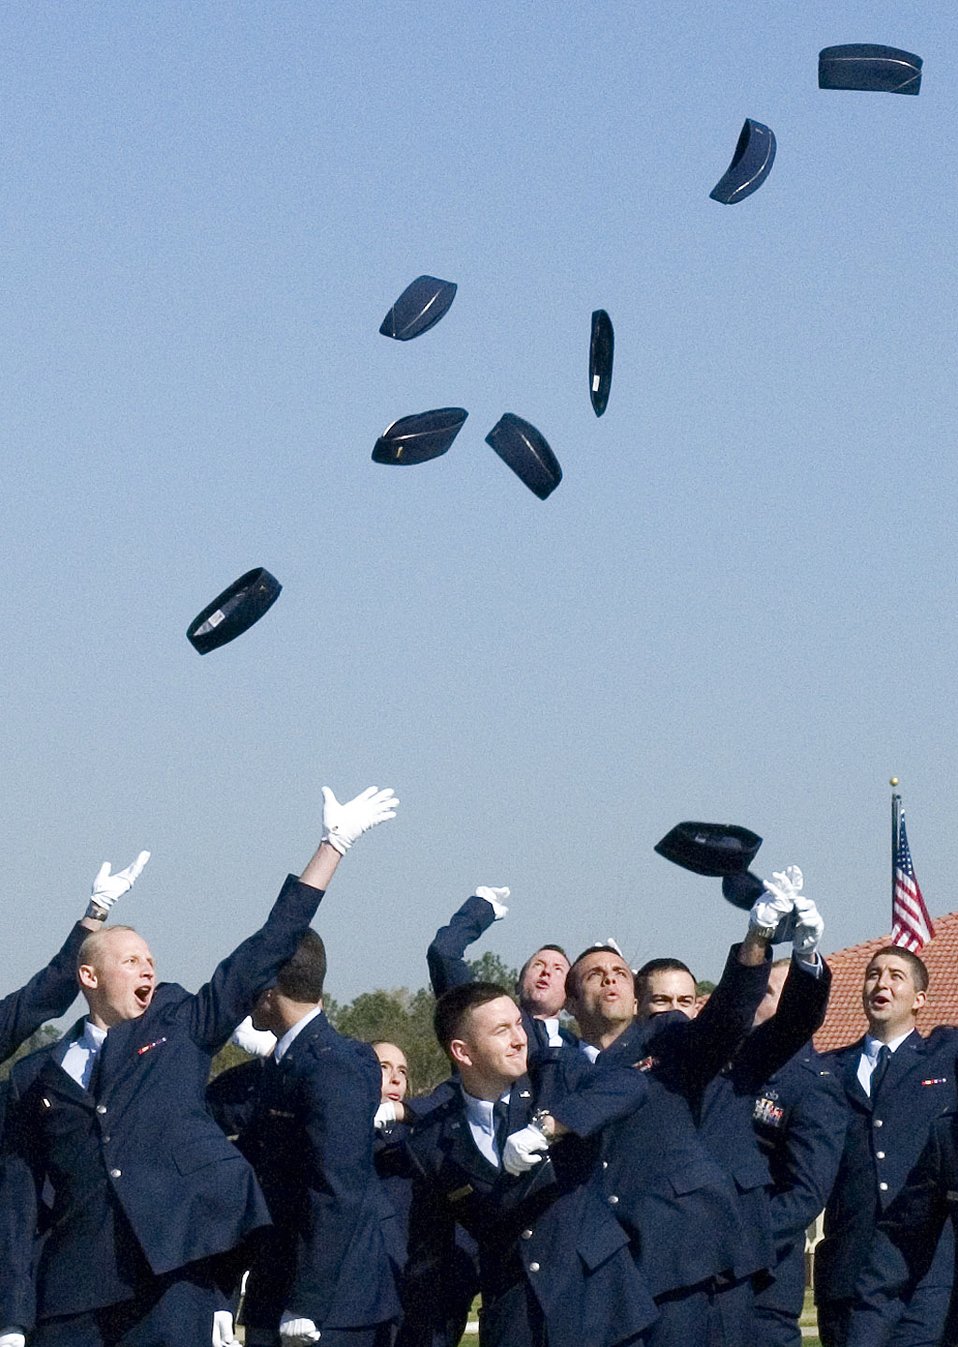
Hand-to-hand combat class graduates

Newly commissioned officers celebrate as they are dismissed for the final time following their Officer Training School basic officer training graduation parade March 12 at Maxwell Air Force Base, Ala. Class 08-03 was the first OTS class to participate in the Air Force Combative hand-to-hand skills training in January.